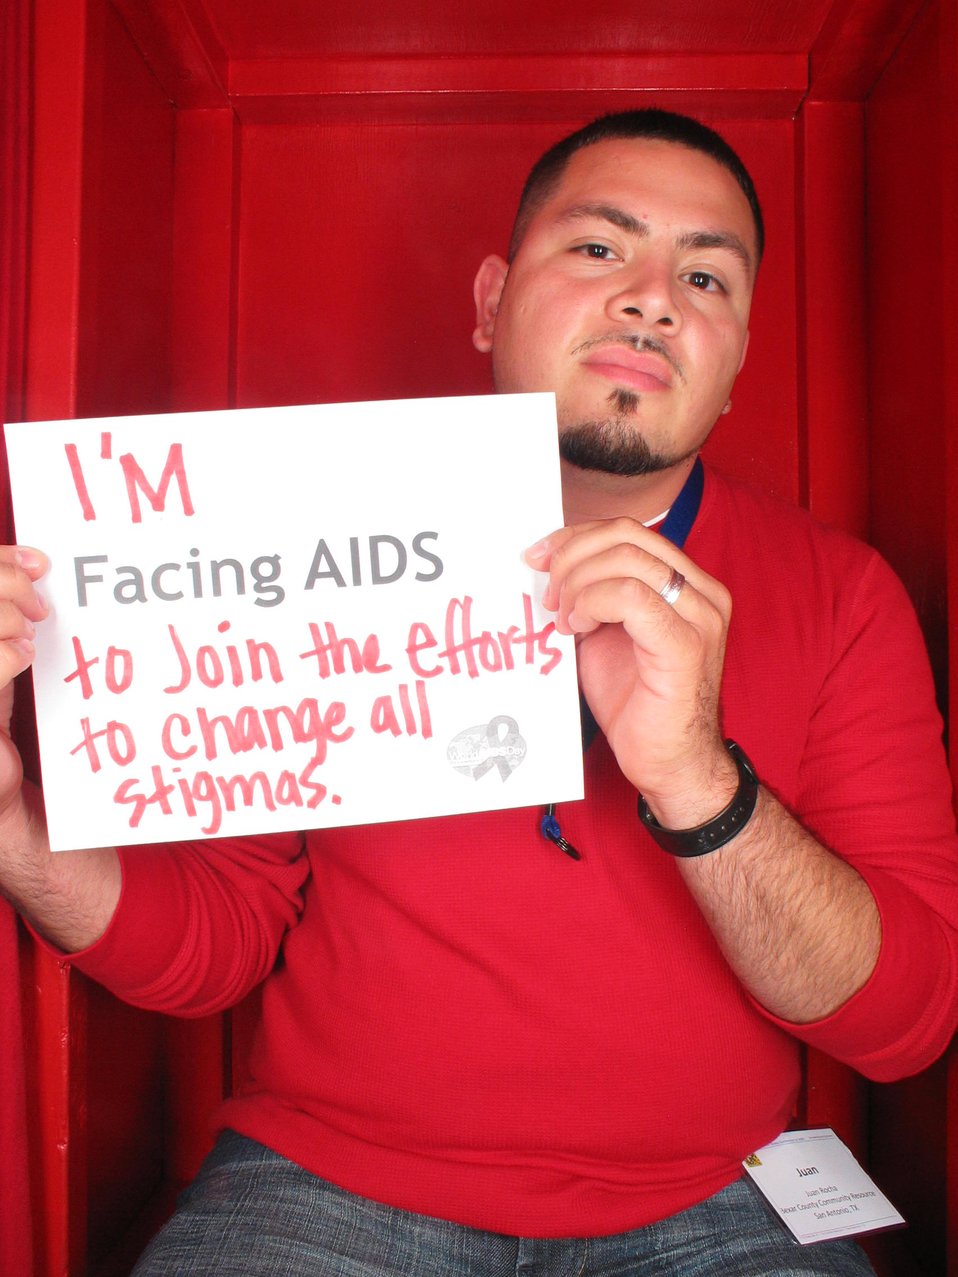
I'm Facing AIDS to join the efforts to change all stigmas.